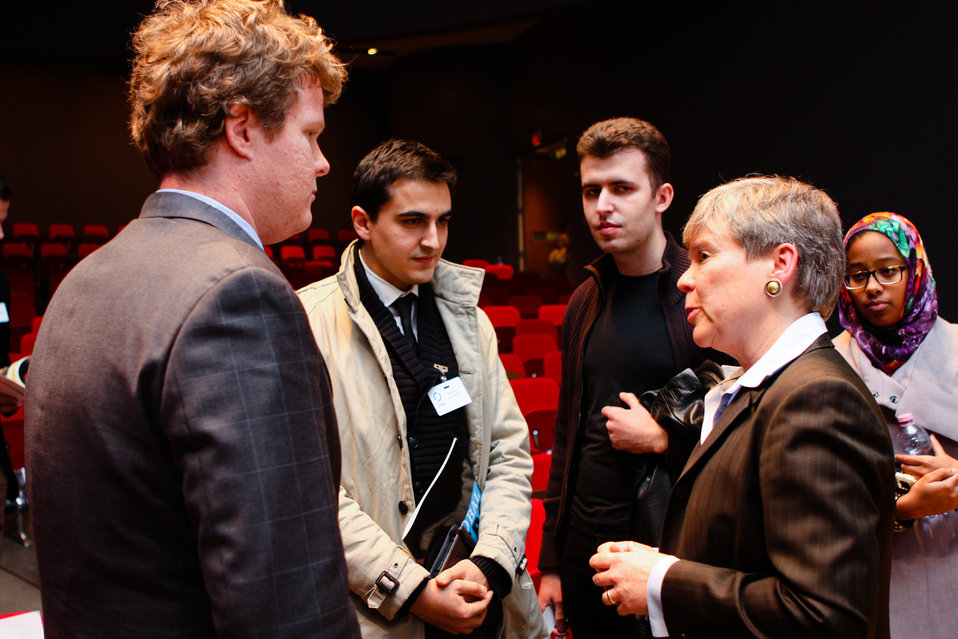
Acting Under Secretary Gottemoeller Speaks With Participants at the Global Zero Conference

Acting Under Secretary for Arms Control and International Security Rose Gottemoeller speaks to participants at the Global Zero Conference at Yale University in New Haven, Connecticut on February 18, 2012.